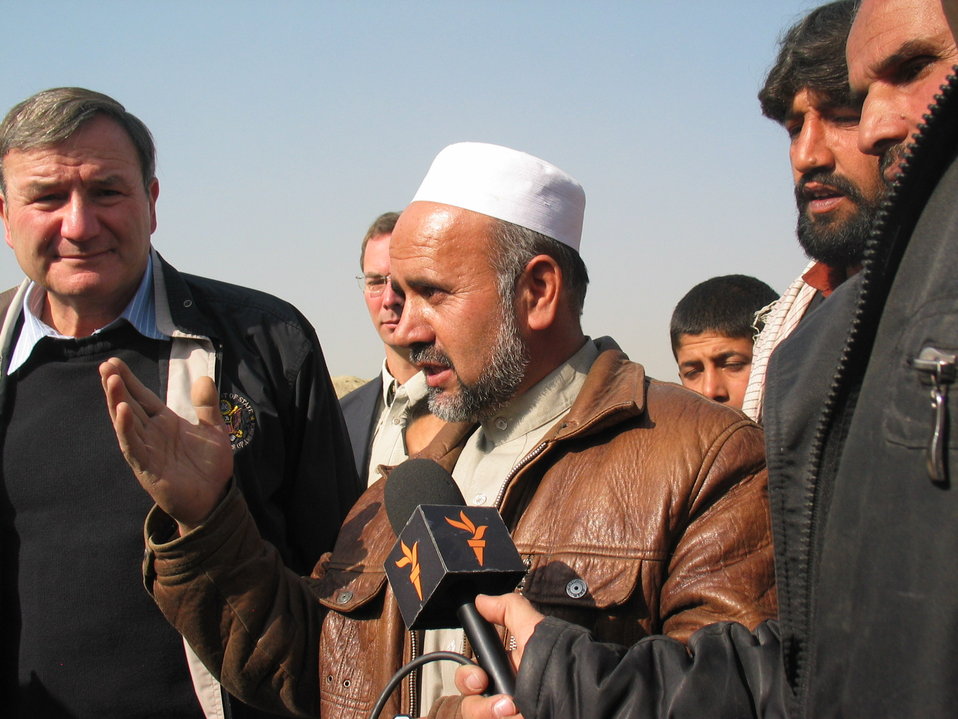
Kabul River Bridge Renovation, December 3, 2010